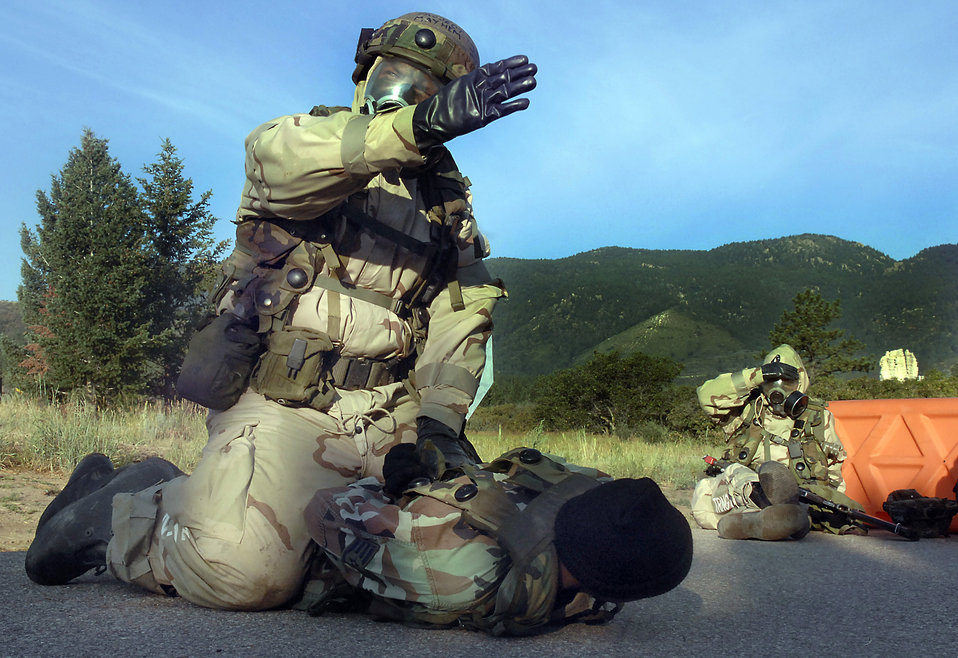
Global Engagement

Cadet Richard Meldrum motions for help in securing and moving an